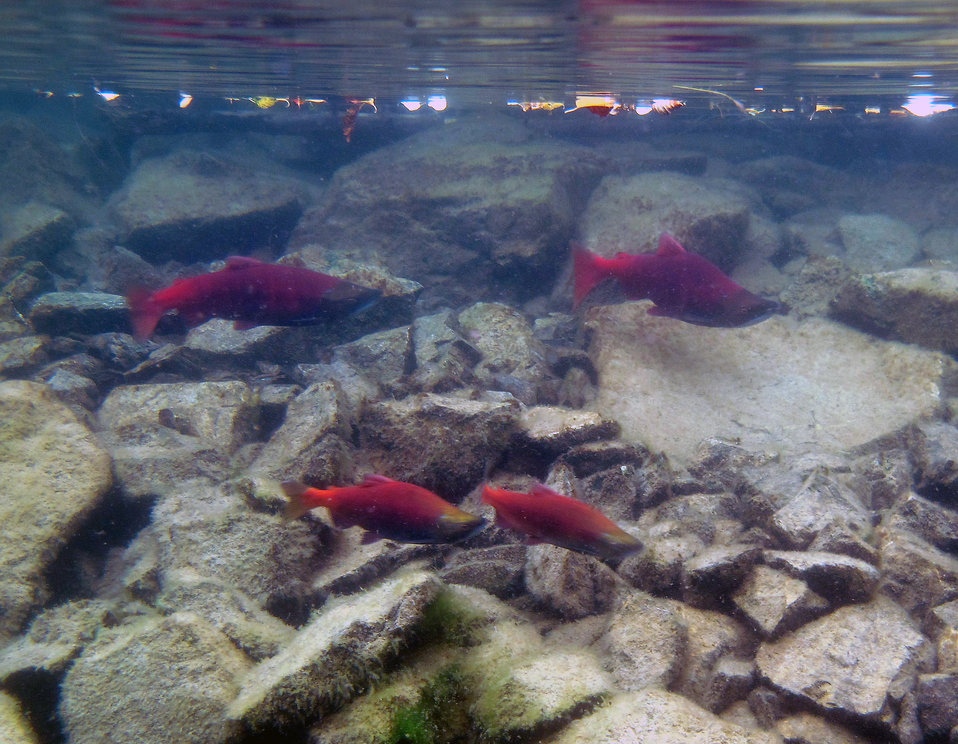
life history variation in Hidden Lake